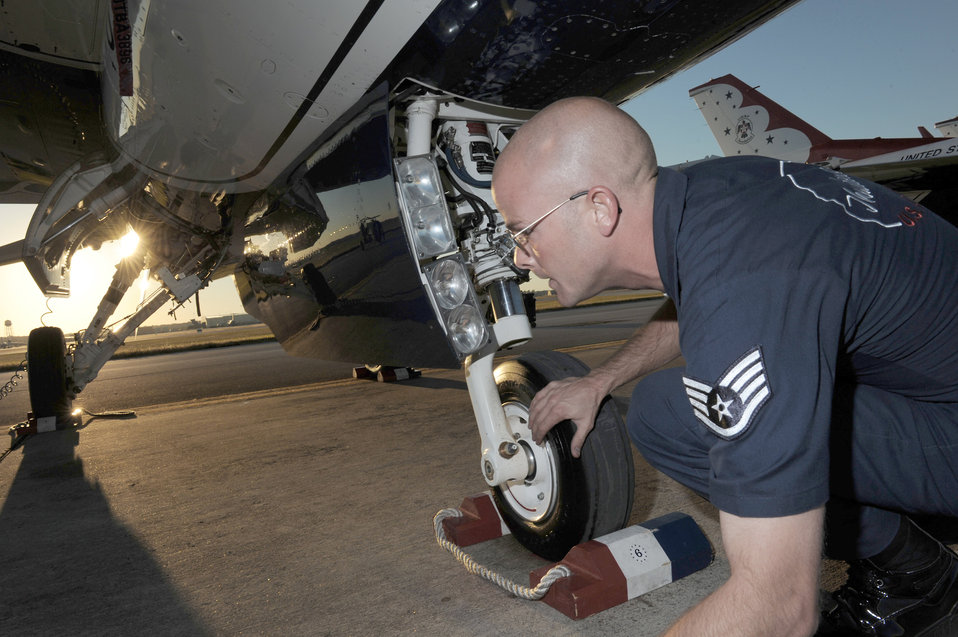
Thunderbirds at Lackland

Staff Sgt. Lance Murphy inspects his jet during post-flight maintenance at Kelly Air Field, Texas, Nov. 7, 2010. Sergeant Murphy is a Thunderbird crew chief.